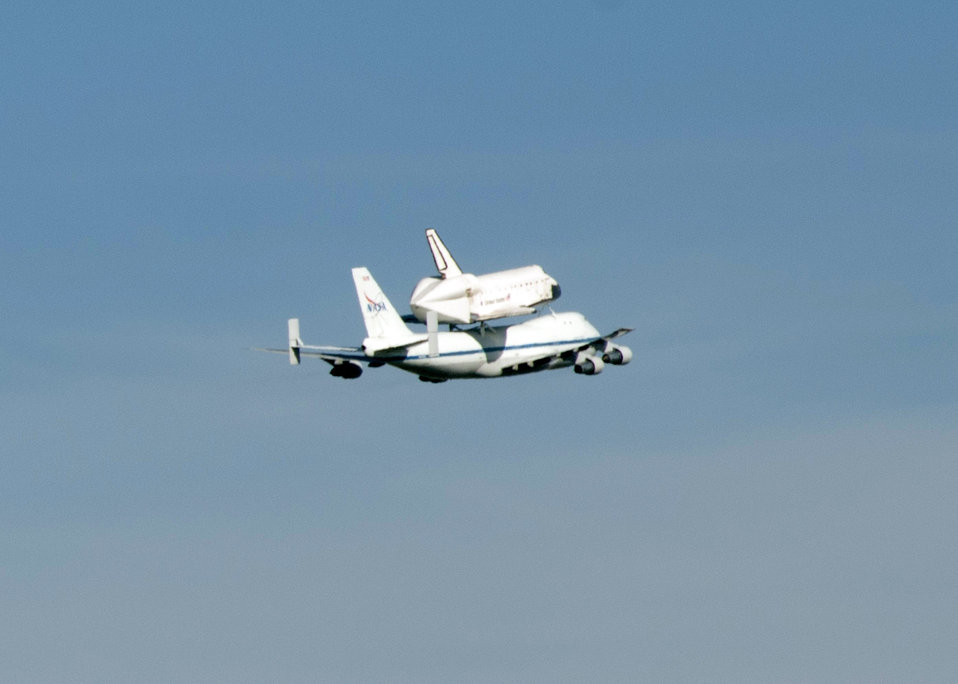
Space shuttle Endeavour flies over Sacramento District headquarters

The space shuttle Endeavour makes its final flight Sept. 21, 2012 and flies over the Capitol building near the U.S. Army Corps of Engineers Sacramento district headquarters in Sacramento, Calif. The Corps has a history of design and construction support for the National Aeronautics and Space Administration (NASA). Historical vignette: 1.usa.gov/OgWTBn